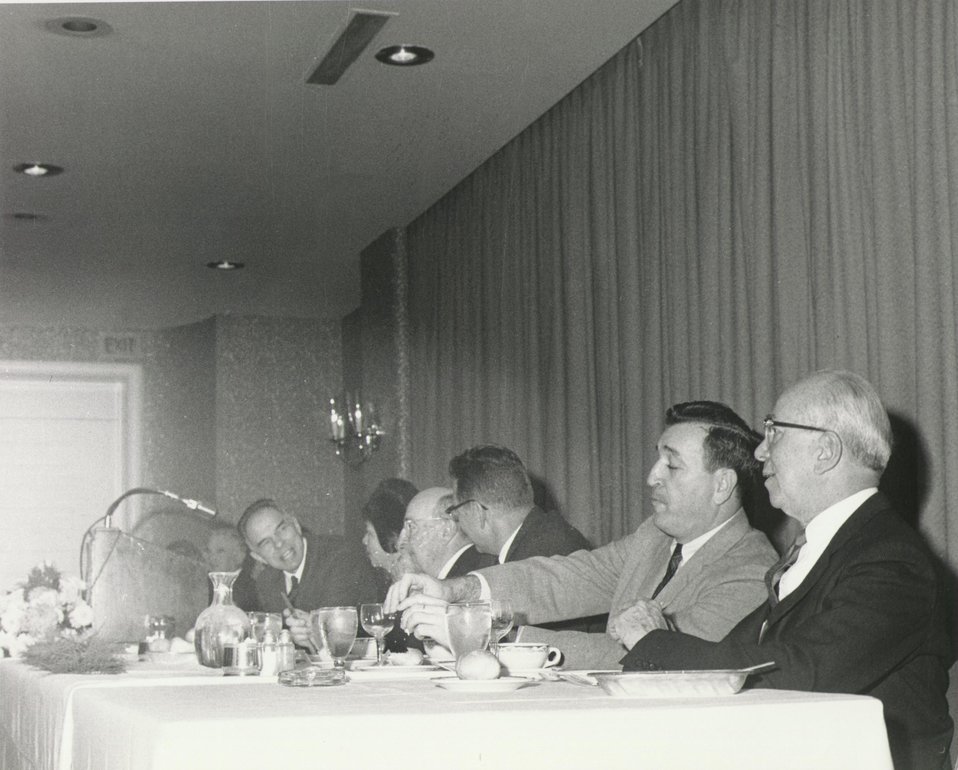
Fermi Award Ceremony for Teller in 1962.